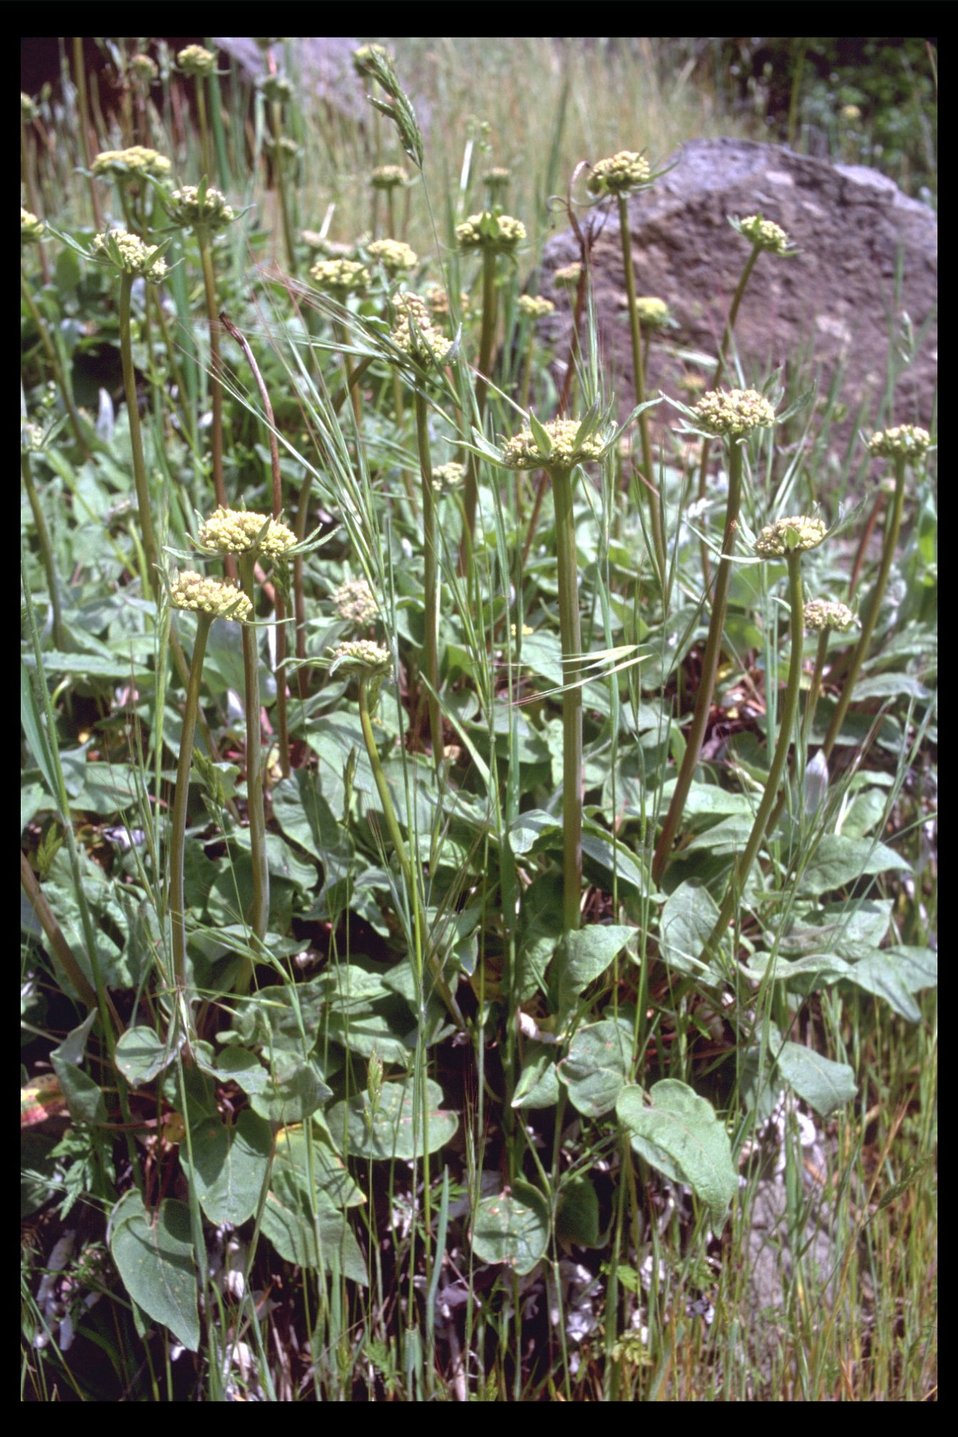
Close up of Arrowleaf Buckwheat (Eriognum compositum) near Lost Creek Lake.